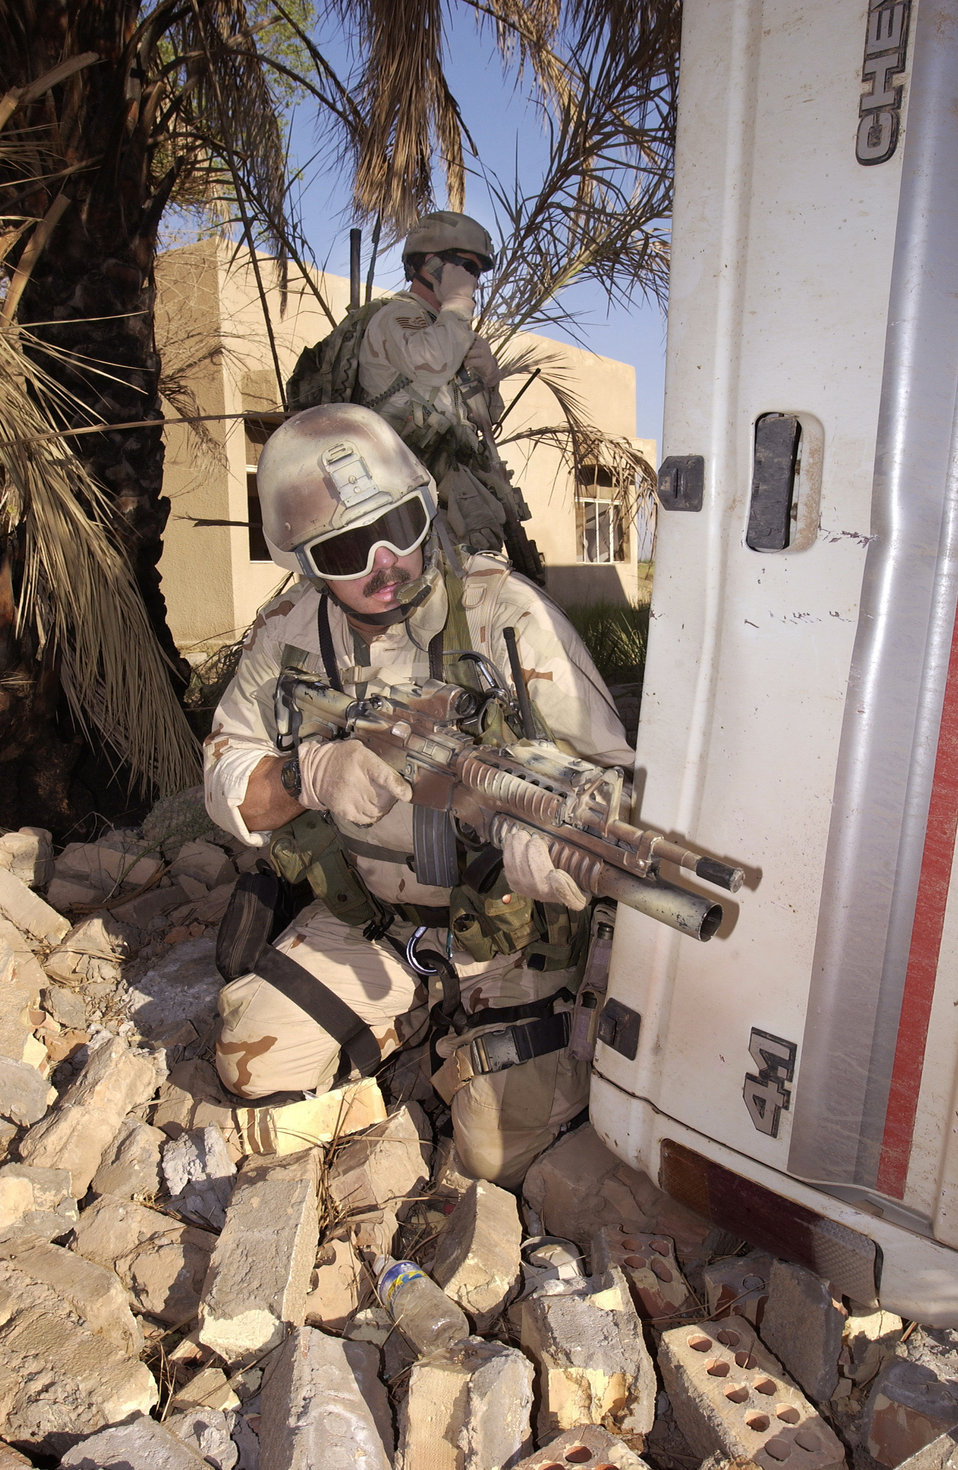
Lookin' out for bad guys

OPERATION IRAQI FREEDOM -- A pararescueman scans for aggressors while others tend to a mock accident victim during a Combat Search and Rescue exercise. The exercise was designed to hone the skills of the CSAR team deployed to support Operation Iraqi Freedom.